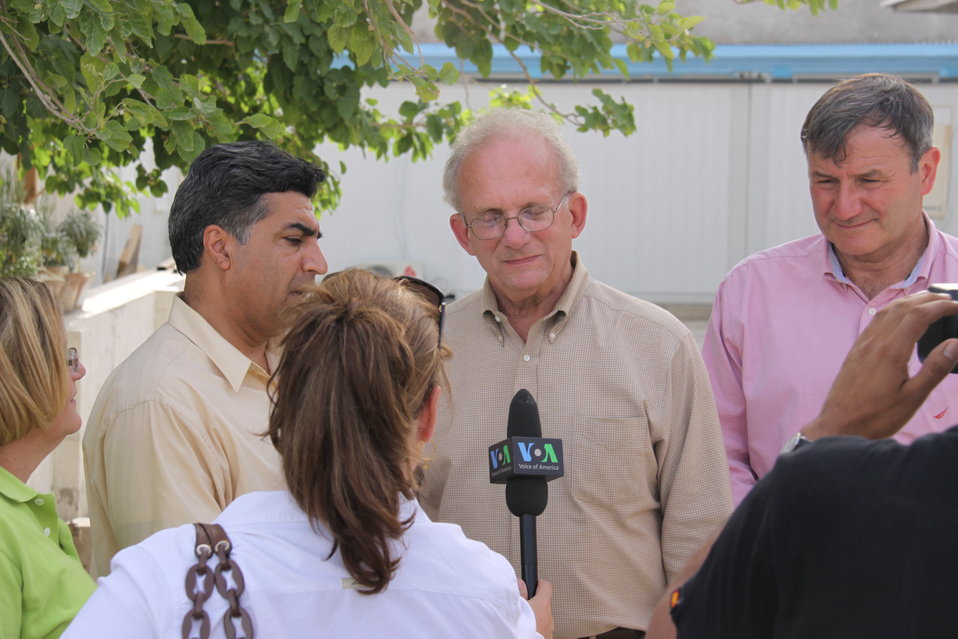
Meeting with Local Leaders in Kandahar